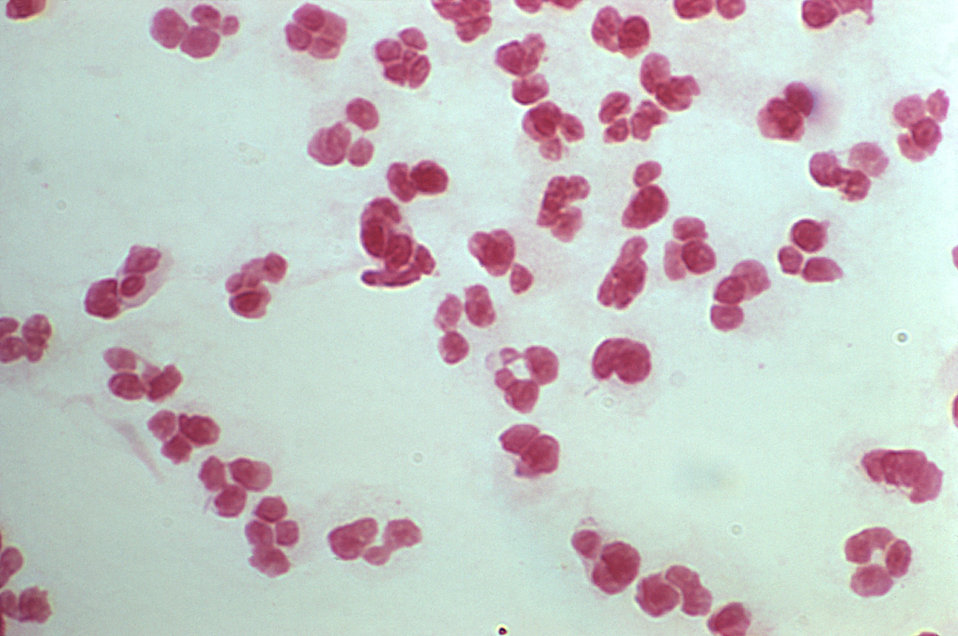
This is a photomicrograph of a Gram-stained urethral exudate sample from a male who presented with a case of urethritis. In this particular view, no Gram-negative diplococci were evident, however, in PHIL 1908 and 2307, which featured other views of this specimen, Neisseria gonorrhoeae bacteria, were found to be present.